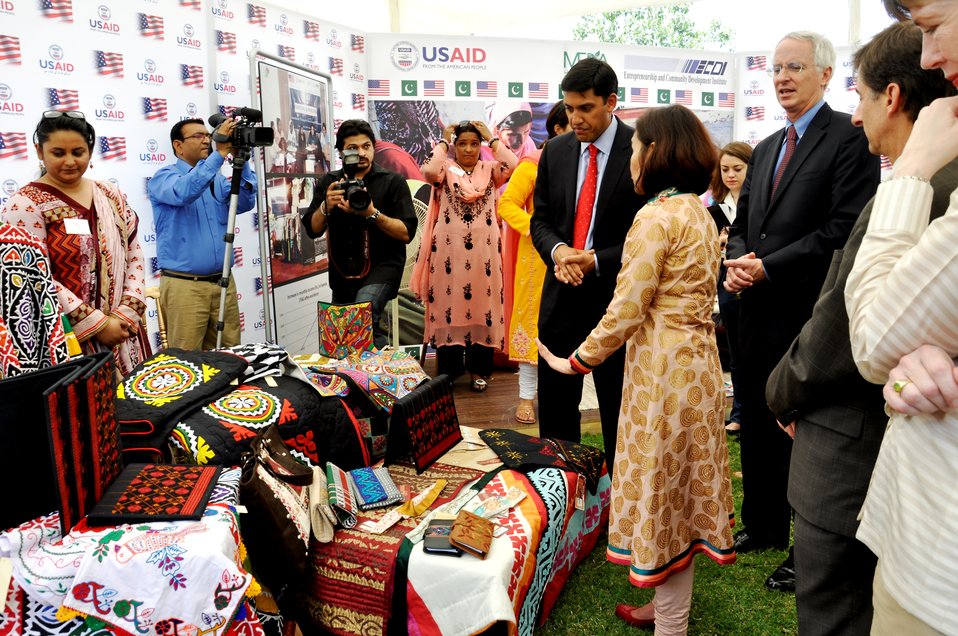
Dr. Rajiv Shah visiting Entrepreneurs project stalls